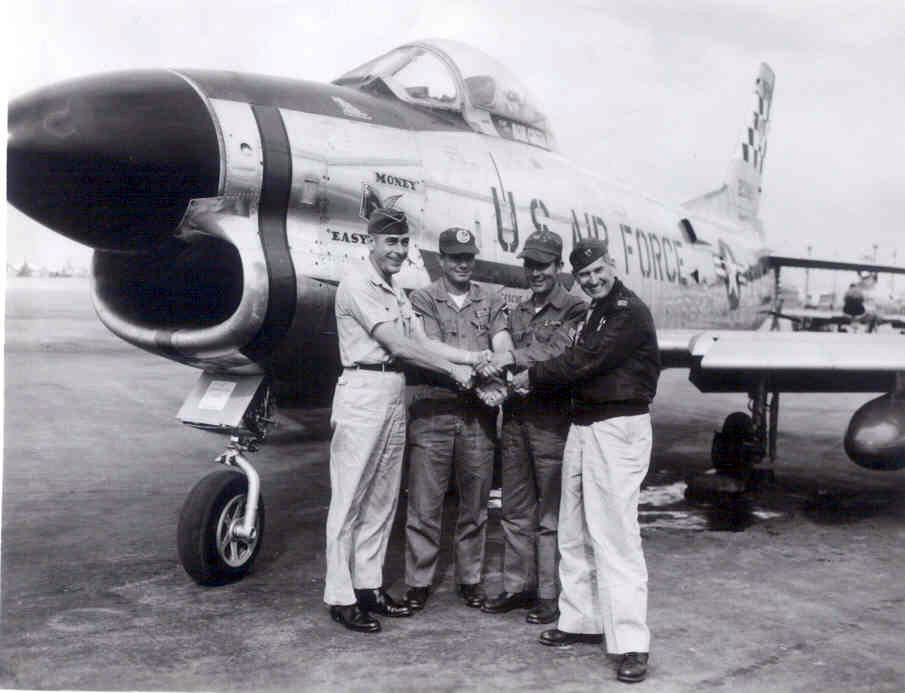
Best combat-ready rate in 1959

(From left) Lt. Col. Albert Christopher, 25th Fighter-Interceptor Squadron commander, Senior Master Sgt. Thomas F. Bell, 25 FIS maintenance line chief, Staff Sgt. Jacobs, a 25th FIS crew chief, and Capt H. A. Pfeiffer, 25th FIS maintenance officer, join hands after the 25th FIS at Osan Air Base, South Korea attained its best combat ready aircraft rate in 1959.